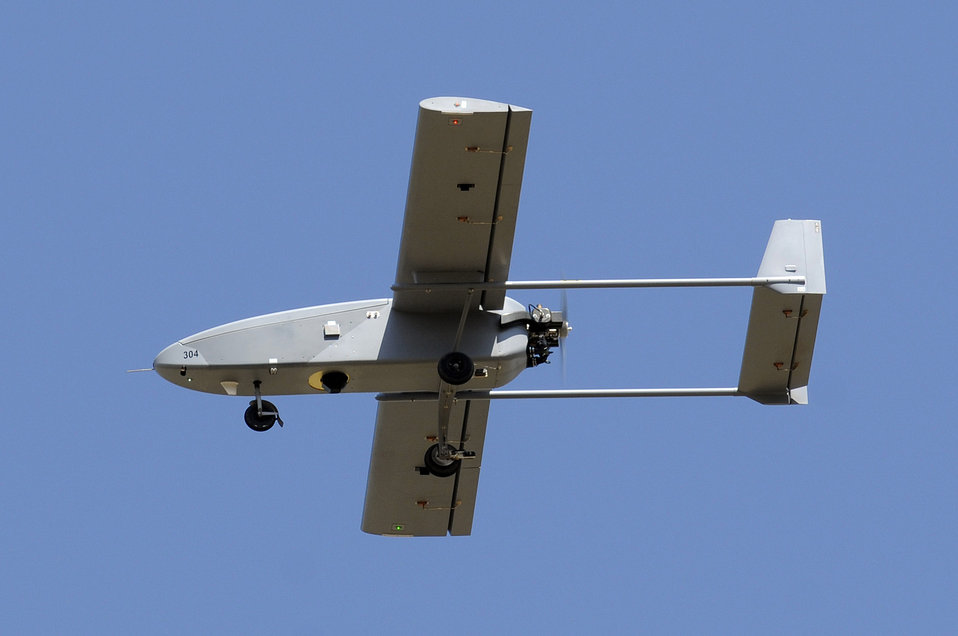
Academy officials add unmanned aircraft system into curriculum

The U.S Air Force Academy's unmanned aircraft systems Viking 300 aircraft flies July 22 over Fort Carson, Colo.